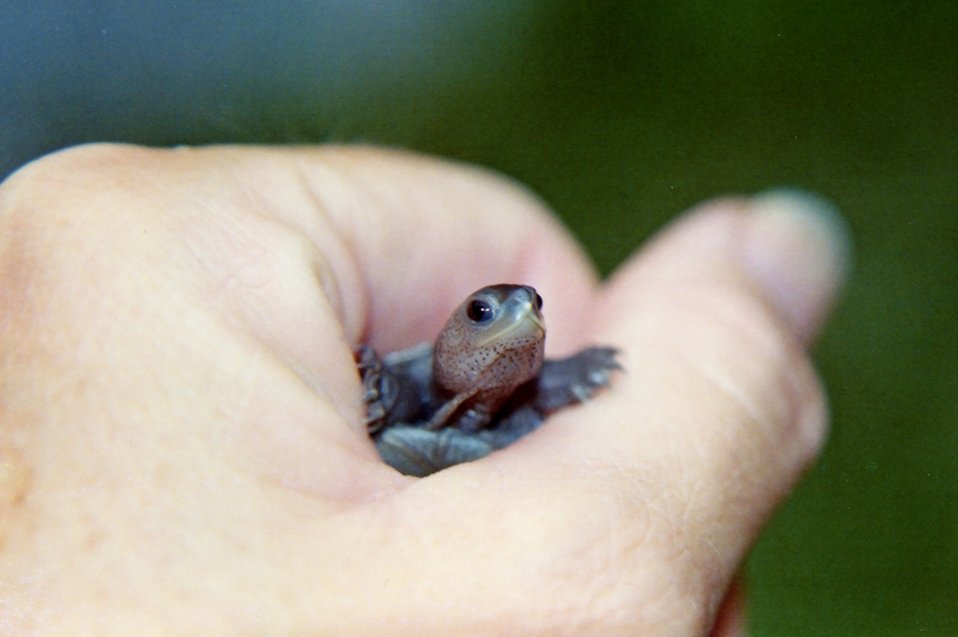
Diamondback terrapin hatchling. (Let me outta here!)